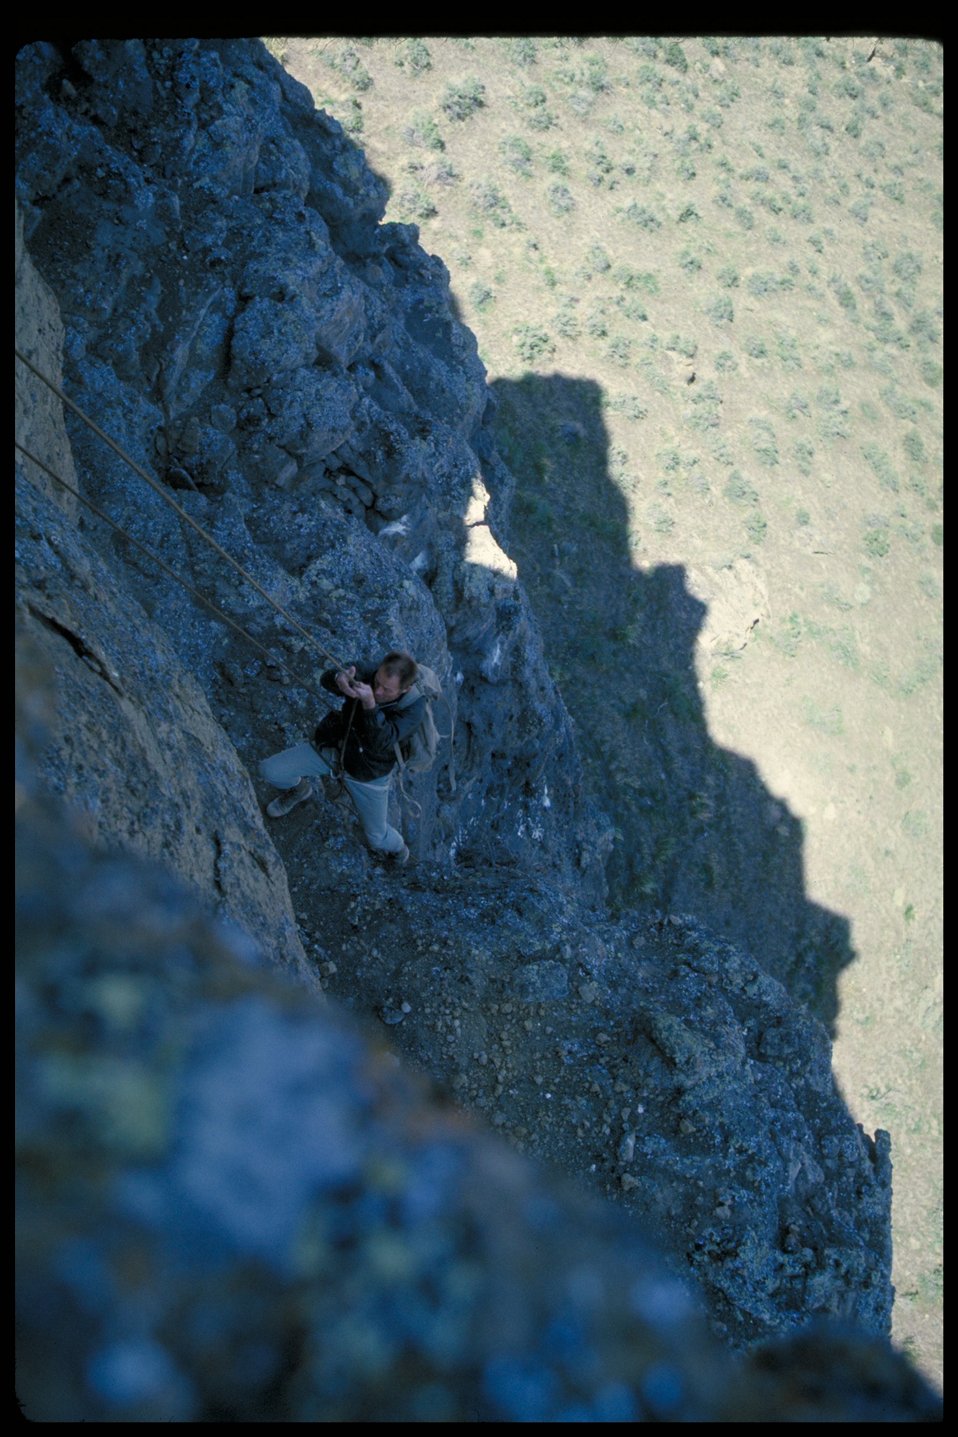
Climbing into Eagle Eyrie in Swan Falls Birds of Prey National Conservation Area BOP Owyhee Field Office LSRD Lower Snake River District